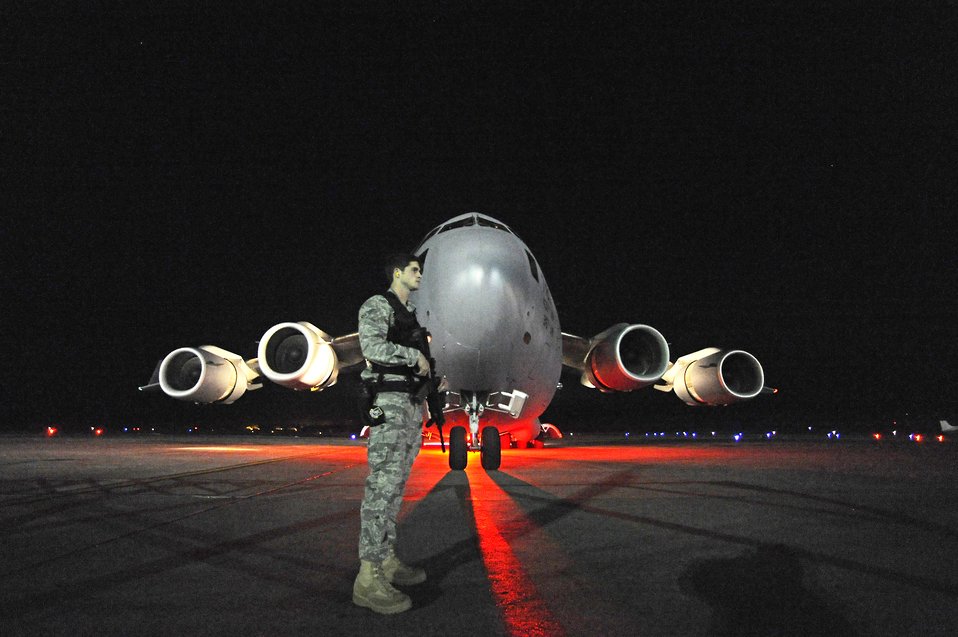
Always watchful

Airman 1st Class Ryan Merriman provides security for a C-17 Globemaster III aircraft and its crew as earthquake relief supplies are unloaded at the airport in Port-au-Prince, Haiti, Jan. 16, 2010. Airman Merriman is a member of a 437th Security Forces fly away security team.